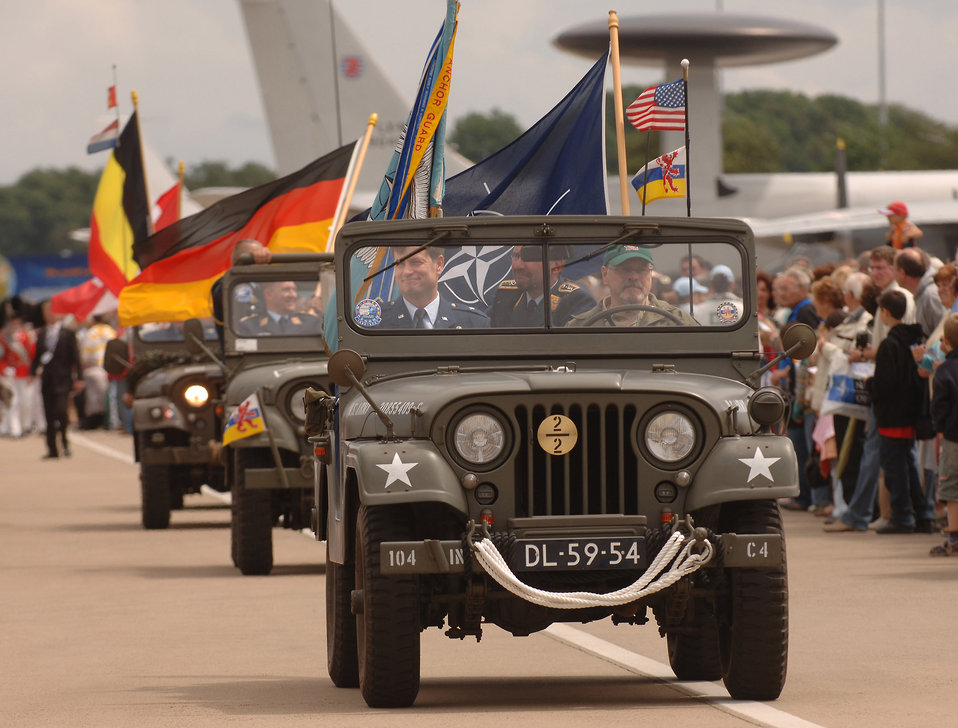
NATO celebrates 25th anniversary of E-3's arrival

Brig. Gen. Stephen P. Schmidt rides at the front of a multinational force parade before several thousand German, Belgian and Dutch citizens June 16 at Geilenkirchen NATO Air Base, Germany, during the 25th anniversary celebration of the aircraft's initial operations out of the NATO installation that began in February 1982. General Schmidt is the NATO E-3 AWAC component commander.